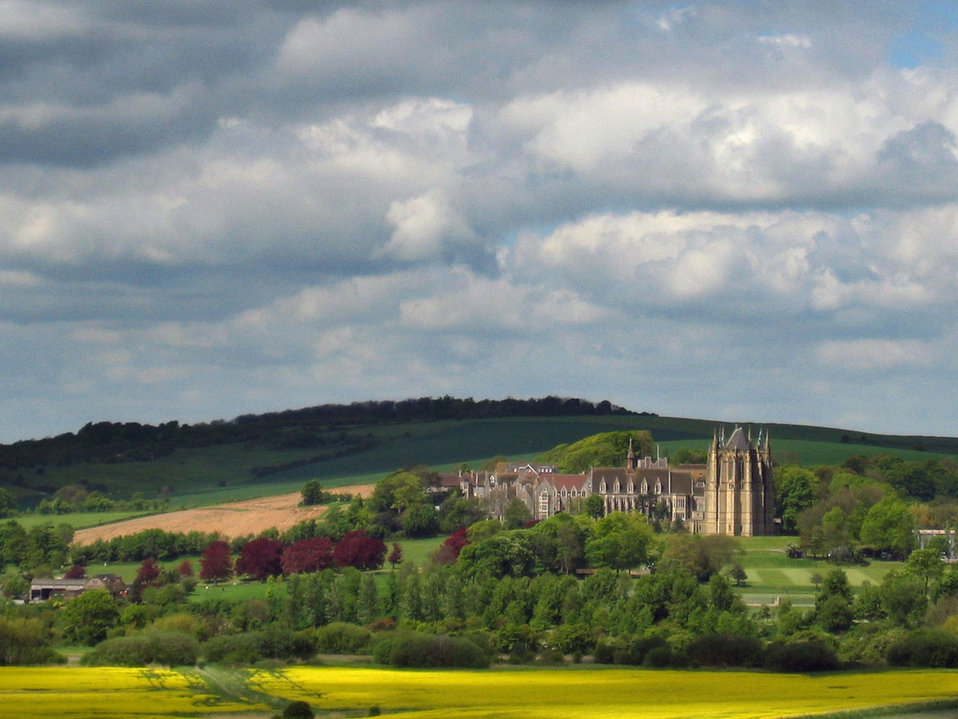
Lancing college and chapel in west sussex with rapeseed in fields..